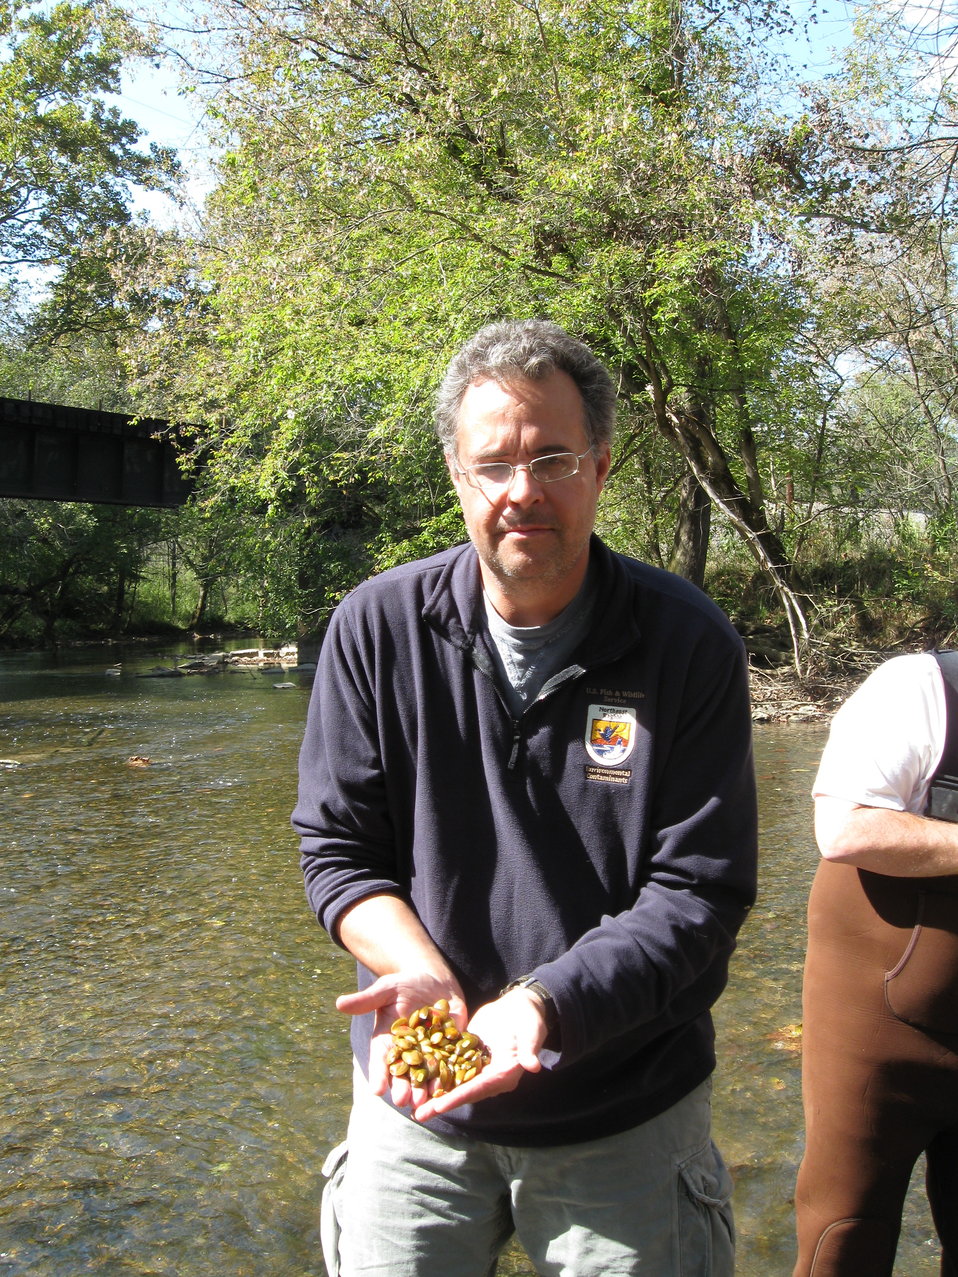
Jess Jones

Releasing mussels for a NRDAR restoration project in the upper Clinch River at Cedar Bluff, Virginia

Rachel Carson Award for Scientific Excellence (Individual) – 2013